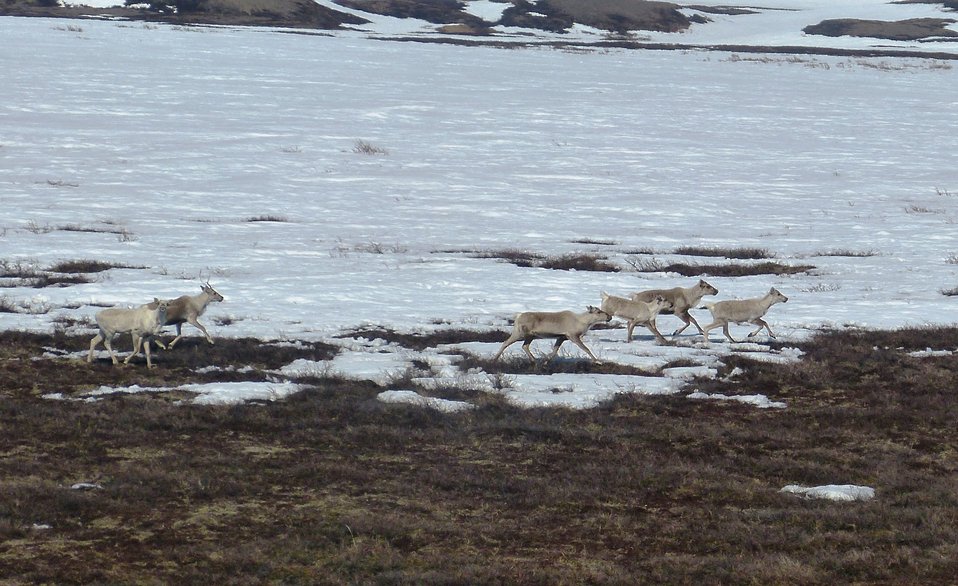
Caribou in Kilbuck Mountains on Yukon Delta National Wildlife Refuge

Photo credit: Kristine Sowl
USFWS, Yukon Delta National Wildlife Refuge